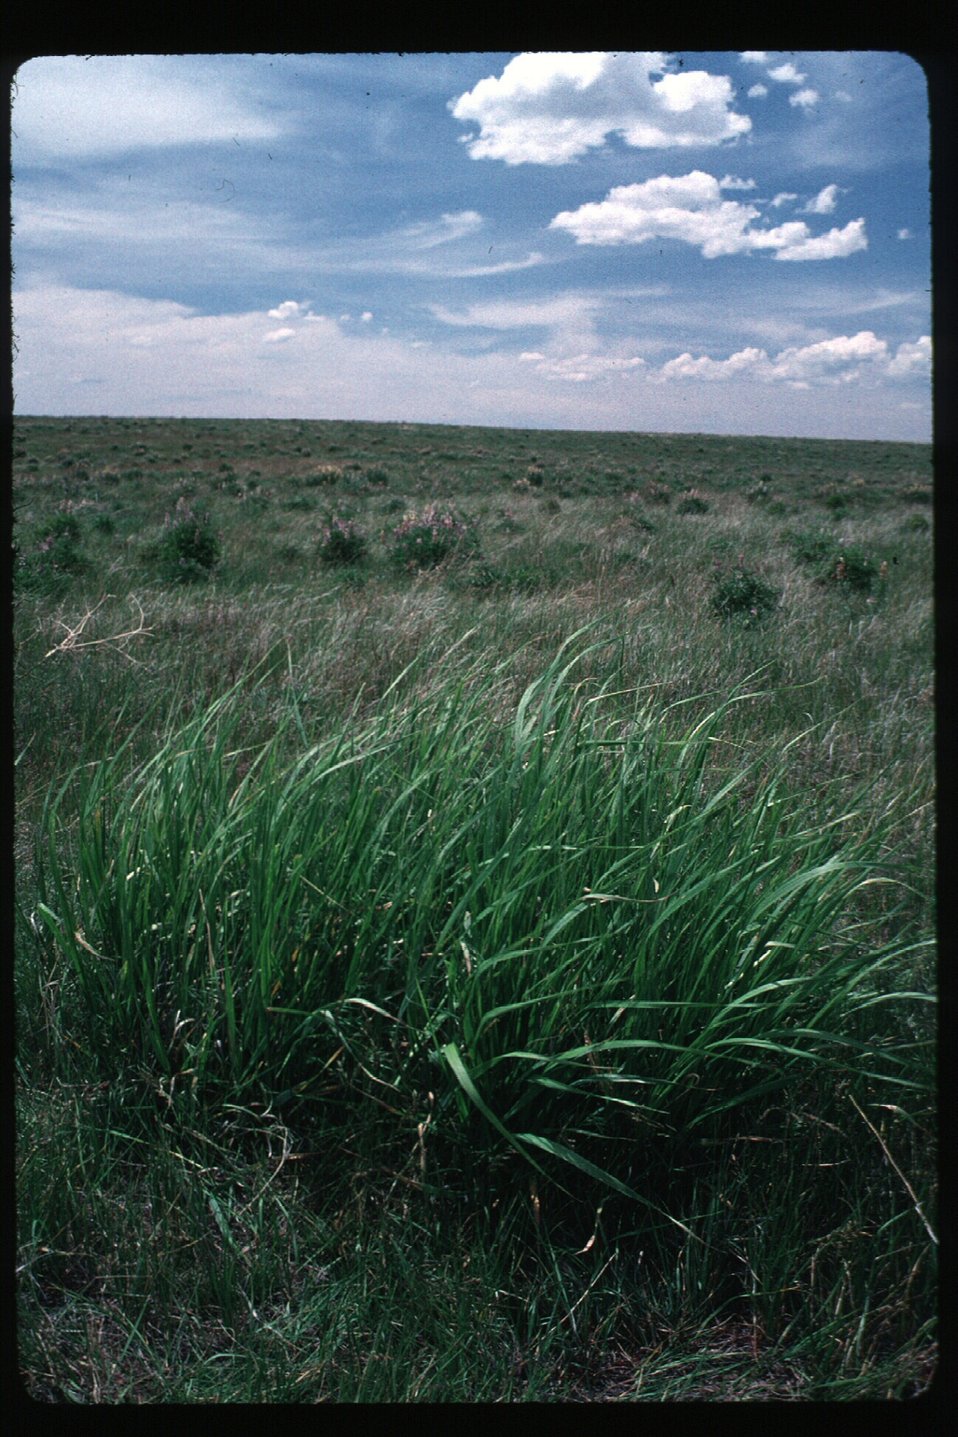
Grasses Rangeland Four Rivers Field Office LSRD Lower Snake River District